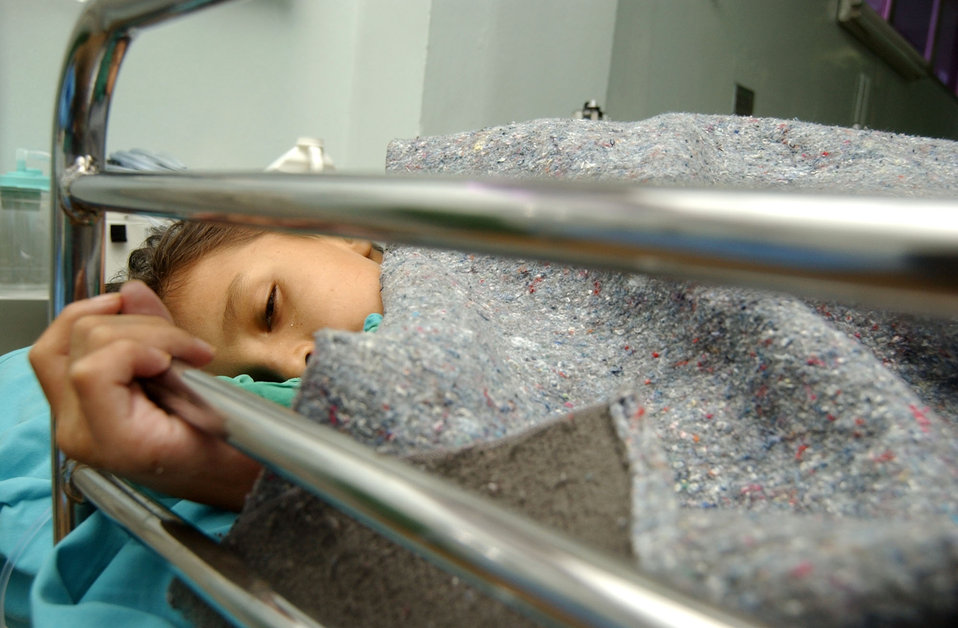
Americans, Hondurans team to fix broken bones

A 9-year-old Honduran boy lies in his recovery room bed Aug. 15 after having surgery on his infected right leg at the Hospital Esquela in Tegucigalpa, Honduras. A medical team of eight people from Wilford Hall Medical Center at San Antonio and Joint Task Force-Bravo at Soto Cano Air Base, Honduras, treated more than 200 people and operated on more than 60 individuals during its two-week training exercise Aug. 5 to 19.